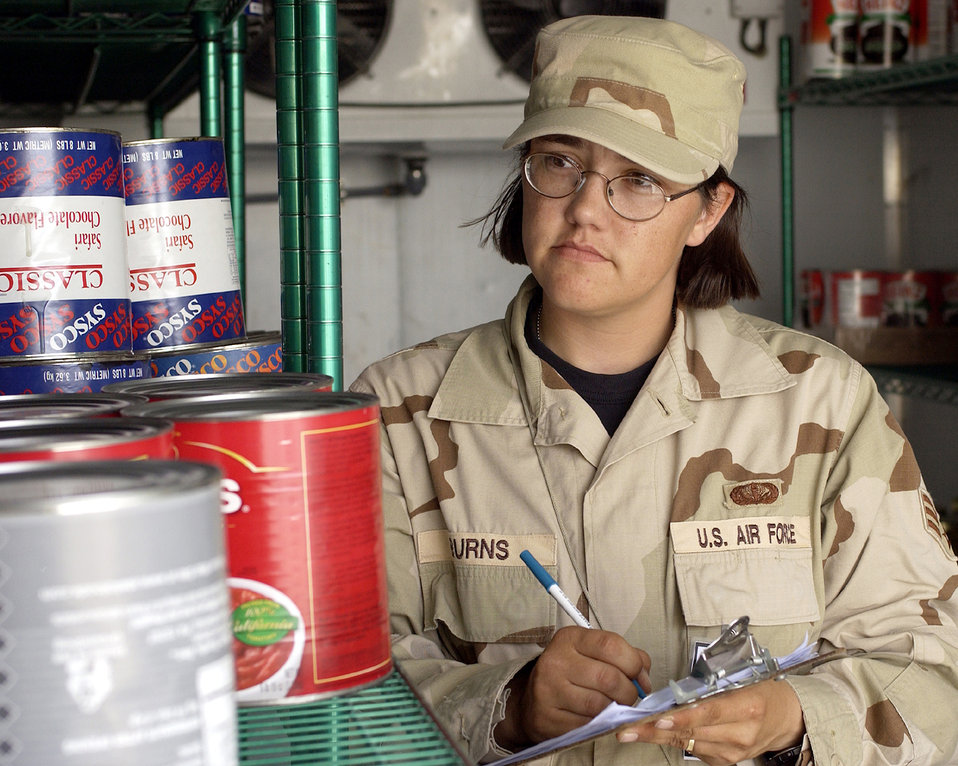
I think I can

SOUTHWEST ASIA -- Senior Airman Cherie Burns inventories canned foods in a dining facility at a forward-deployed location. Airman Burns is deployed from Ramstein Air Base, Germany, supporting operations Iraqi Freedom and Enduring Freedom. She is assigned to the 379th Expeditionary Services Squadron.